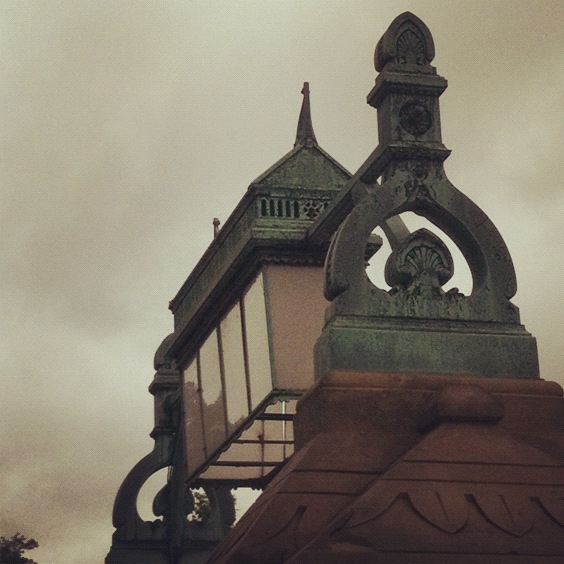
Olmsted Hardscapes

The Capitol Grounds on a rainy day in May.